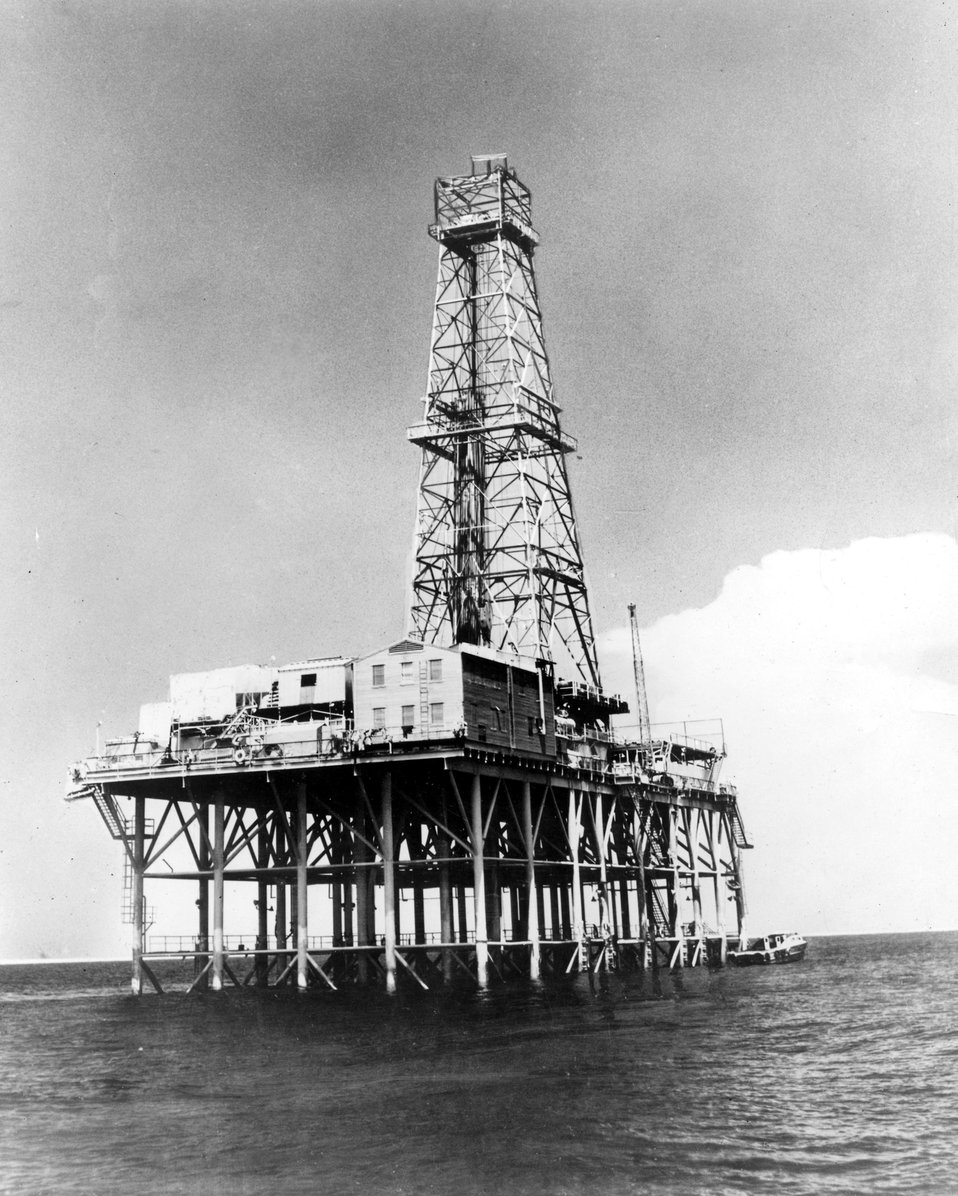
This drilling rig is made up of a steel island topped by a derrick 15 stories tall. The rig can drill six wells from one position. c. undated